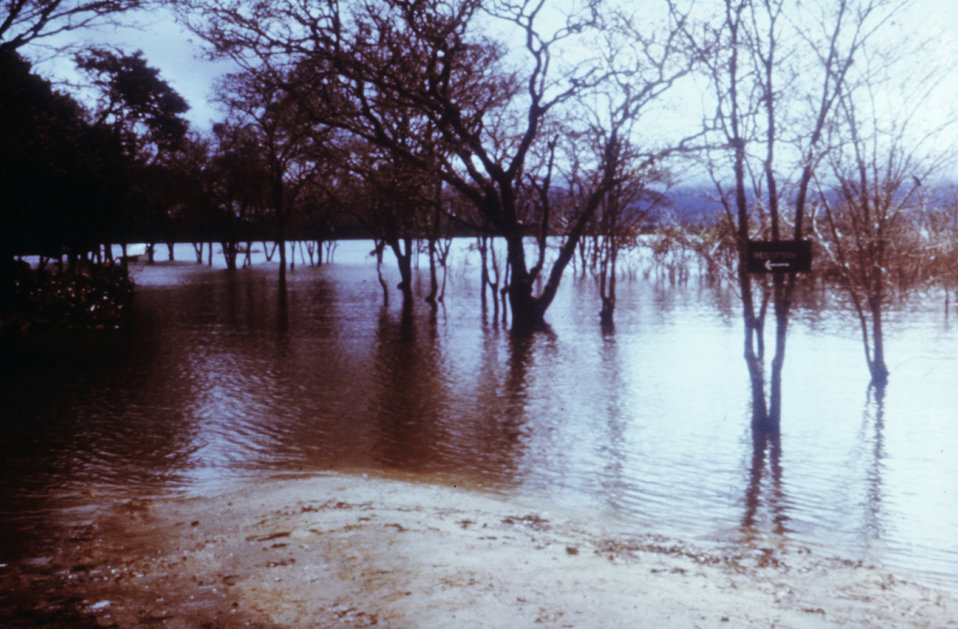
This image shows a body of water in Rhodesia, now Zimbabwe during the 1975 CDC South African Marburg investigation.